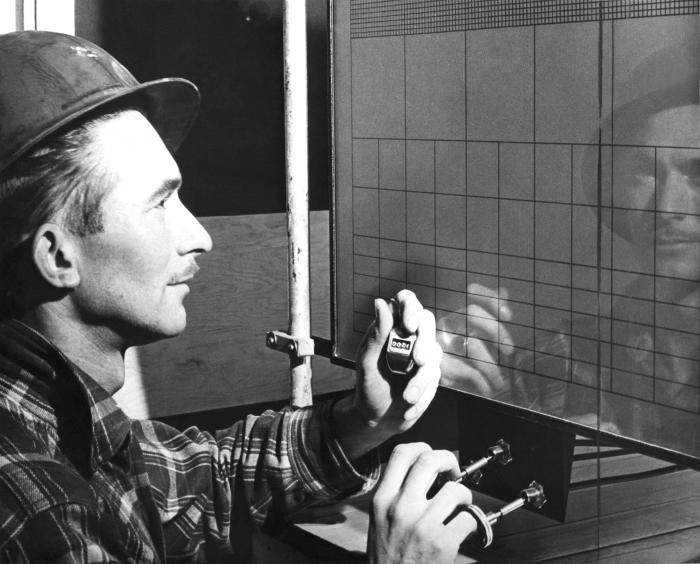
This 1948 historical photograph was provided by the Center for Disease Control's (CDC), National Institute for Occupational Safety and Health (NIOSH). The image depicted a safety engineer who was in the process of conducting a dust count on his grid-screen. Respirable dust is a concern in many industries, both as a repiratory irritant, and as a process contaminant, especially in the case of microcircuitry production.